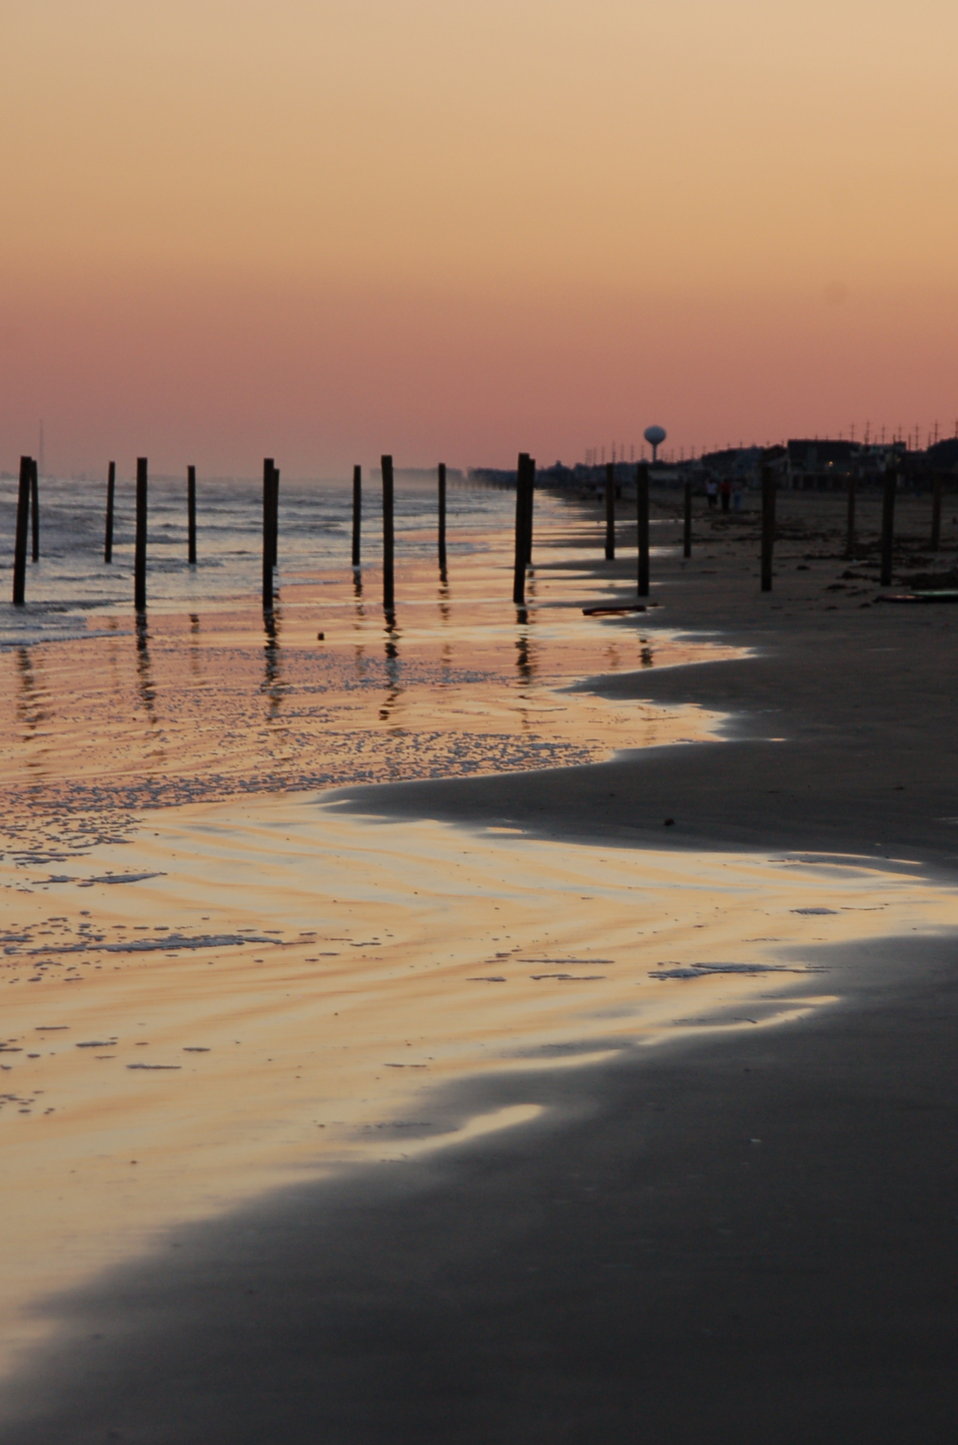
Texas Sunrise in Galveston 0029